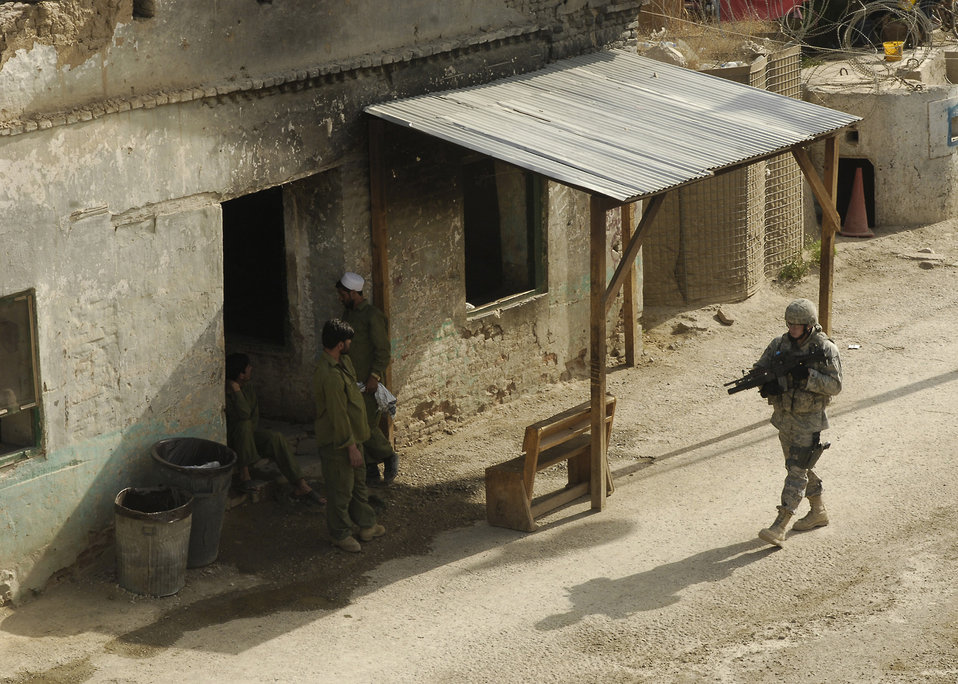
Lock and load

Airmen of the 455th Expeditionary Security Forces Squadron protect the base and patrol around the perimeter of Bagram Airfield, Afghanistan.